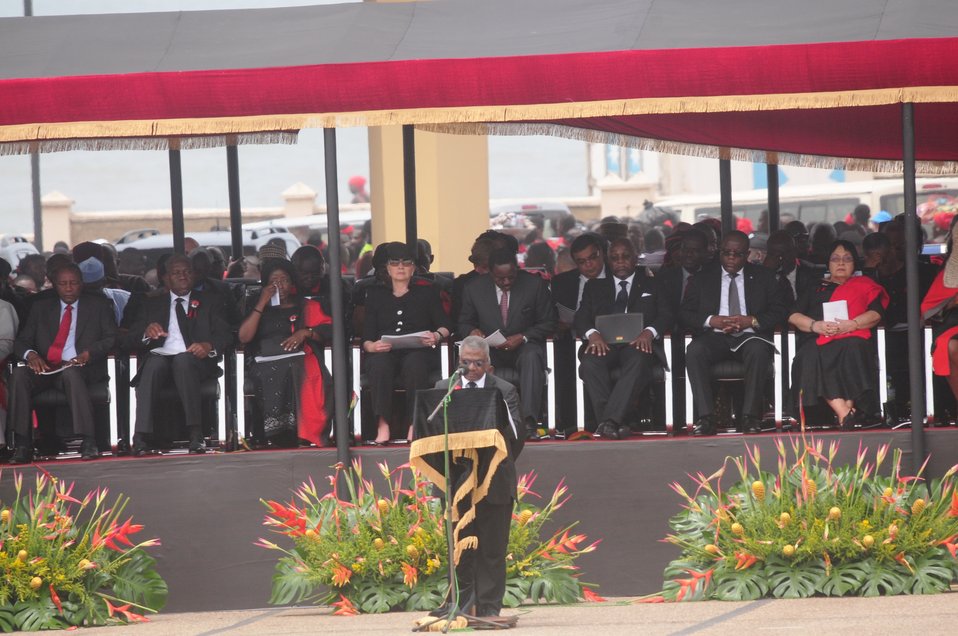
Secretary Clinton Pays Tribute to Ghanaian President Mills

U.S. Secretary of State Hillary Clinton joins thousands of Ghanaians for the Ghana State Funeral of President John Atta Mills in Accra, Ghana, on August 10, 2012.